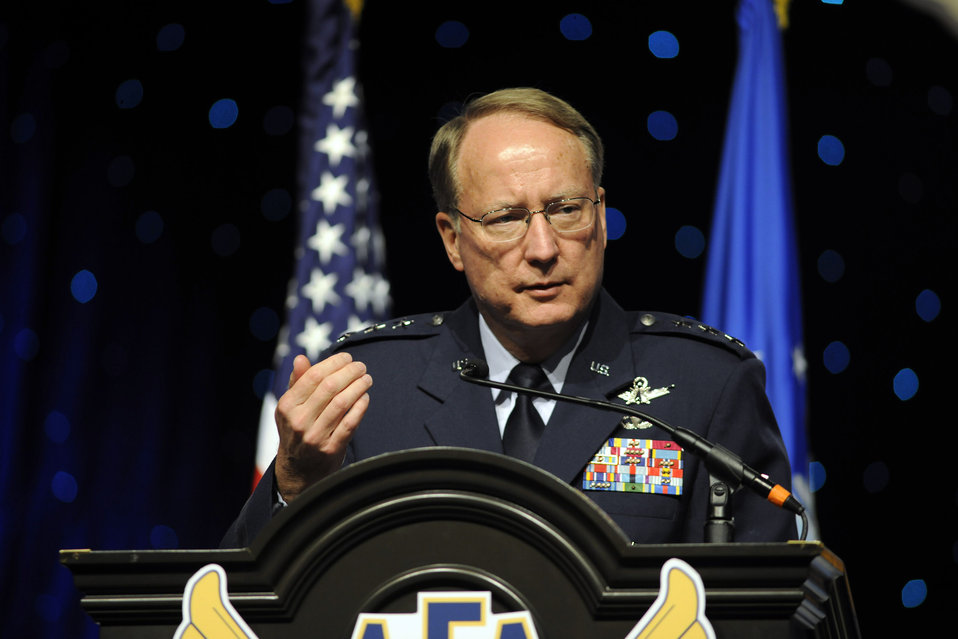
Commander of newest MAJCOM defines success, introduces command at AFA

Lt. Gen. Frank Klotz provides an overview of the organization's mission, structure and timetable with regard to equipment and personnel in a speech during the Air Force Association Air and Space Conference and Technology Exposition in Washington, Sept. 16, 2009. General Klotz is commander of the new Global Strike Command and took command Aug. 7. Establishing the command was part of Reinvigorating the Nuclear Enterprise, a key priority of Secretary of the Air Force Michael Donley and Air Force Chief of Staff Gen. Norton Schwartz.